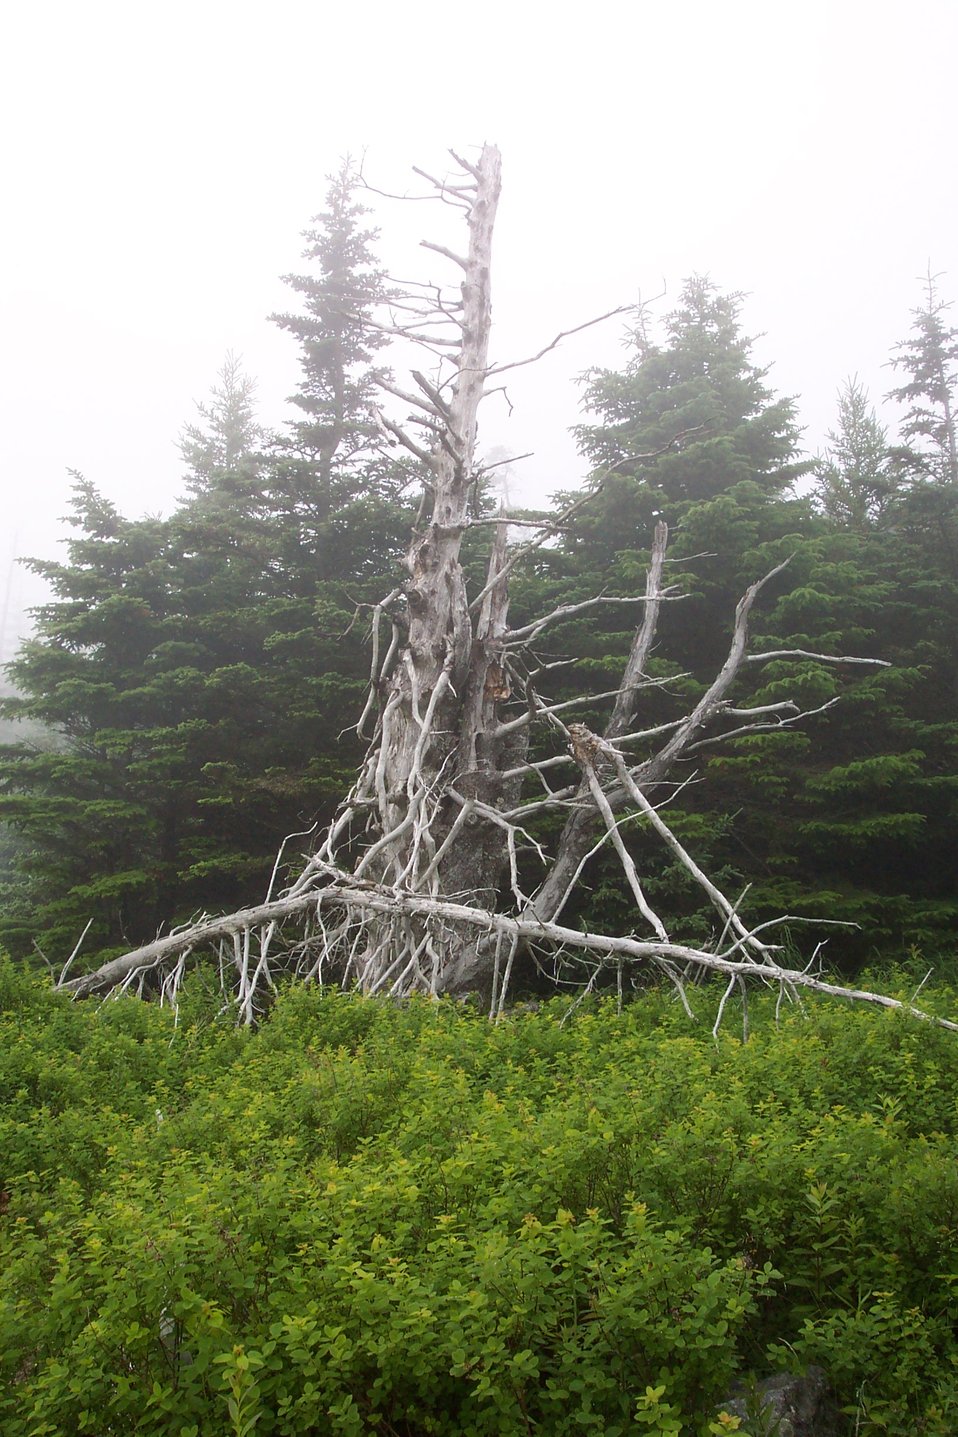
A good tree for a Harry Potter story at West Quoddy Head.